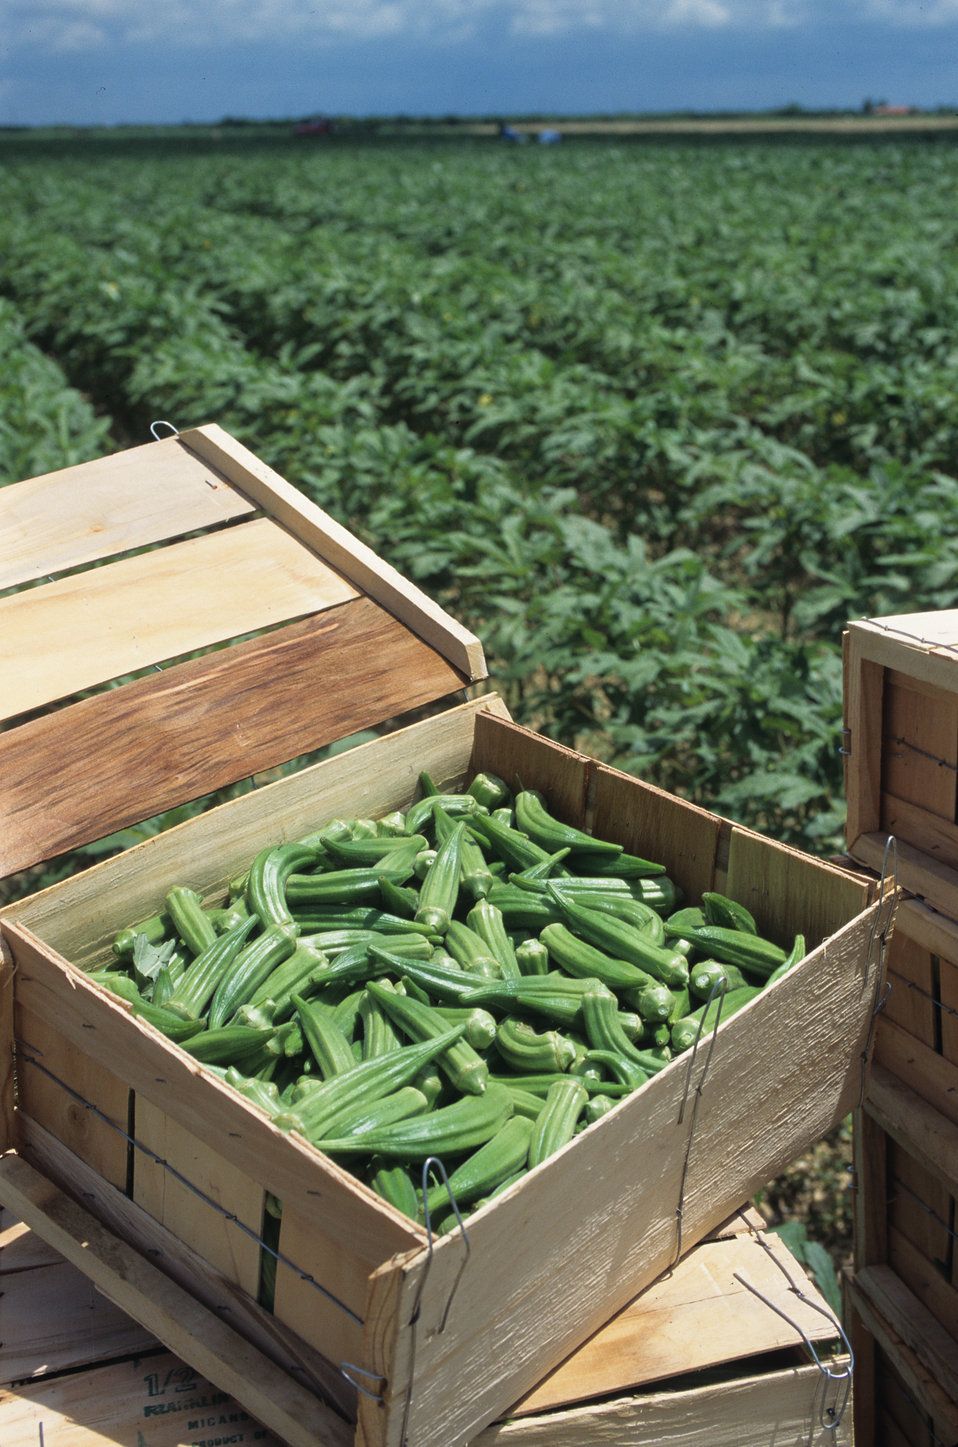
Okra is harvested in a field in Florida in mid May 1995.